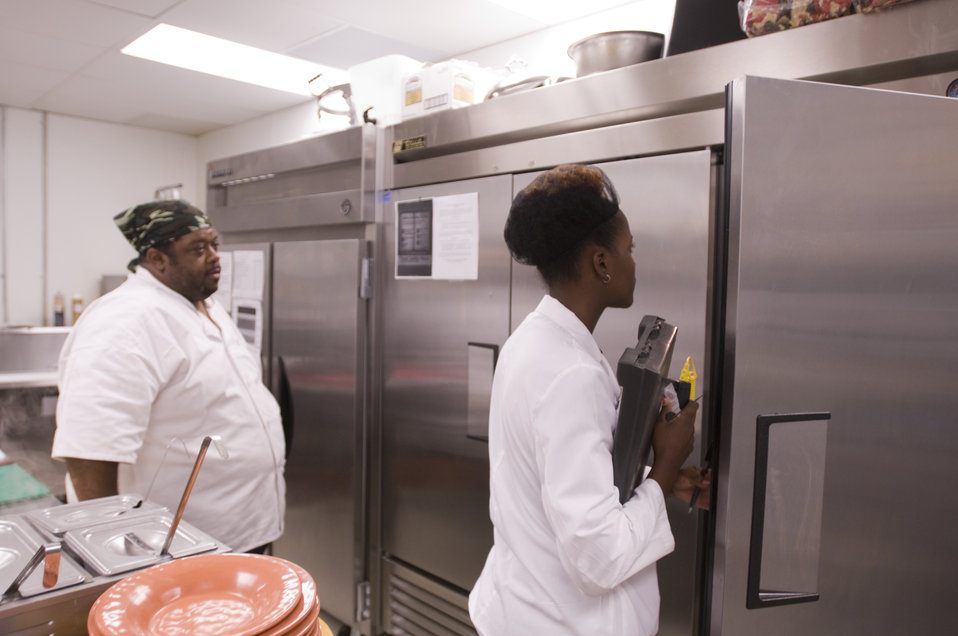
The state-appointed health inspector pictured here at right, was in the process of performing an assessment of this kitchen's sanitary condition. At this point in her inspection, she was about to take some thermal readings of the interior of a refrigerator's contents. Note that one of the kitchen's staff was on hand for the inspection, and feedback provided by the inspector.